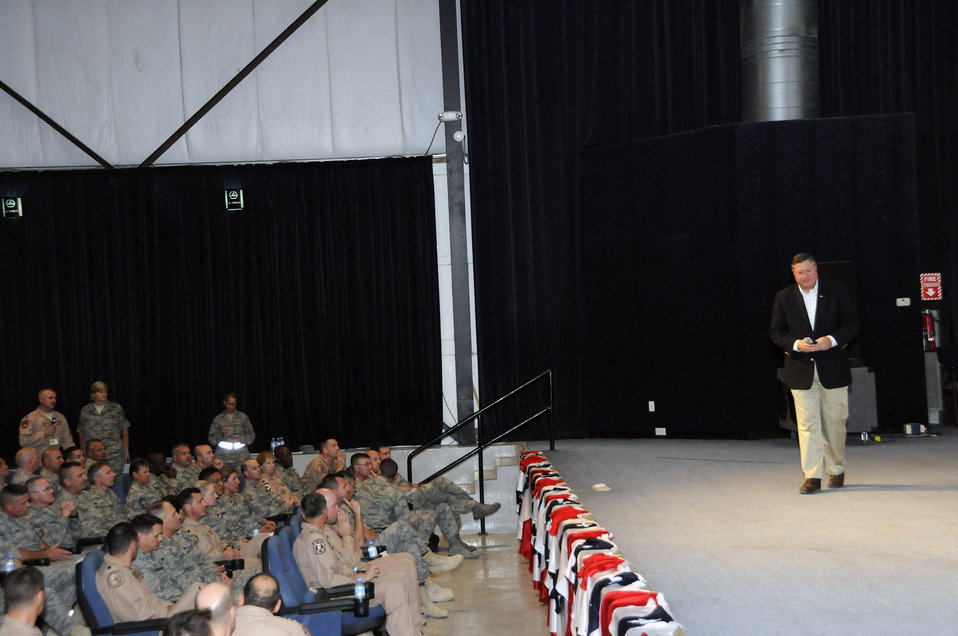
Secretary visits Airmen in Southwest Asia

Secretary of the Air Force Michael B. Donley considers his response to a question during an Airmen's call Oct. 11 at an air base in Southwest Asia. The secretary described his vision ahead for the Air Force, the challenges we face and how we plan to move our Air Force into the future.